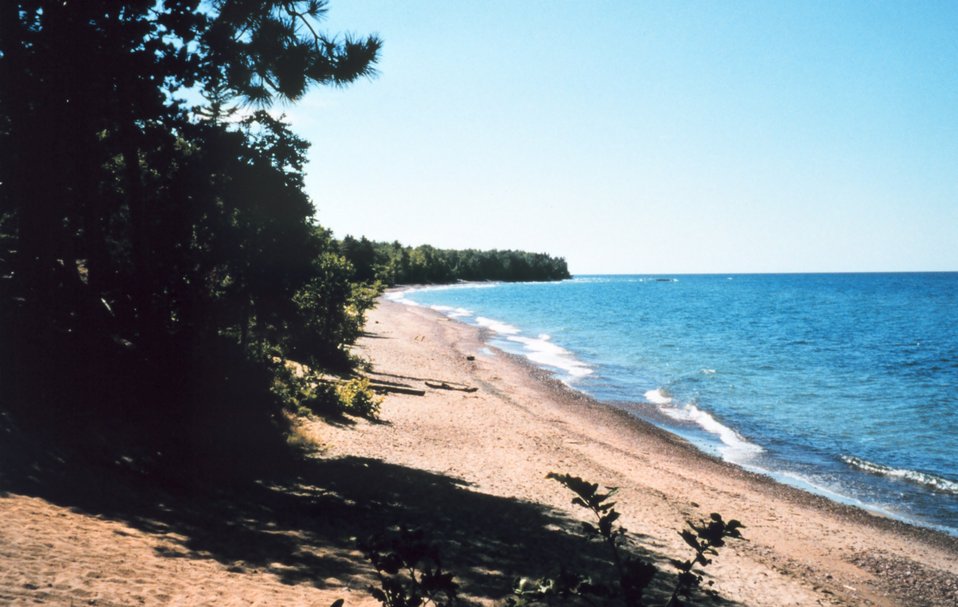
Houghton County